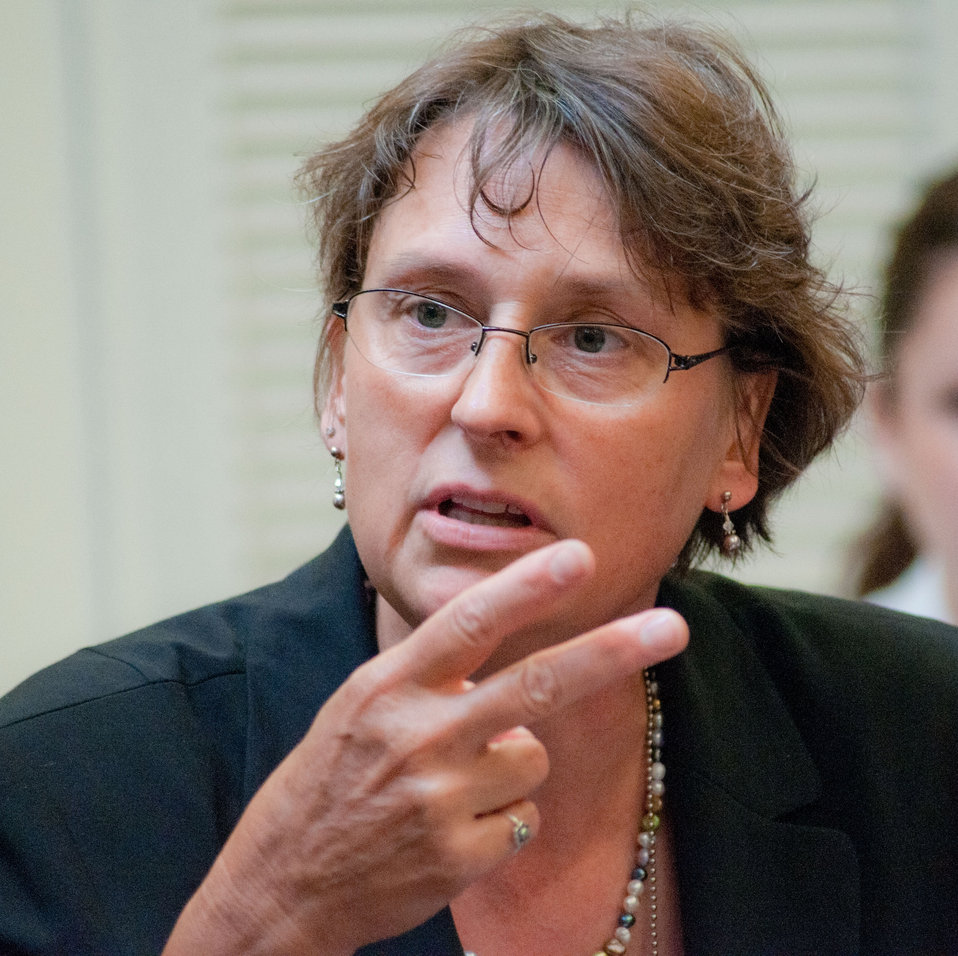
Linda Barnes, Farmer and Educator, Marshalltown Community College (MCC), IA, at the White House Rural Champions of Change meeting at the White House, in Washington, DC, on July 6, 2011. She was asked to participate along with President Barack Obama, Agriculture Secretary Tom Vilsack, the President's Domestic Policy Adviser Melody Barnes and rural communities leaders from across the country for the White House Rural Champions of Change event to strengthen rural communities and promote economic growth. Linda Barnes is a professor of biology at the Marshalltown Community College and also an organic farmer. She founded the Sustainable and Entrepreneurial Agriculture Program at MCC which is the first associate degree program in sustainable agriculture in the Midwest. The program focuses on improving attitudes related to sustainable agriculture due to their practical, hand-on focus and local connections. I believe there is a significant component of this program that is geared towards immigrant communities in the area.